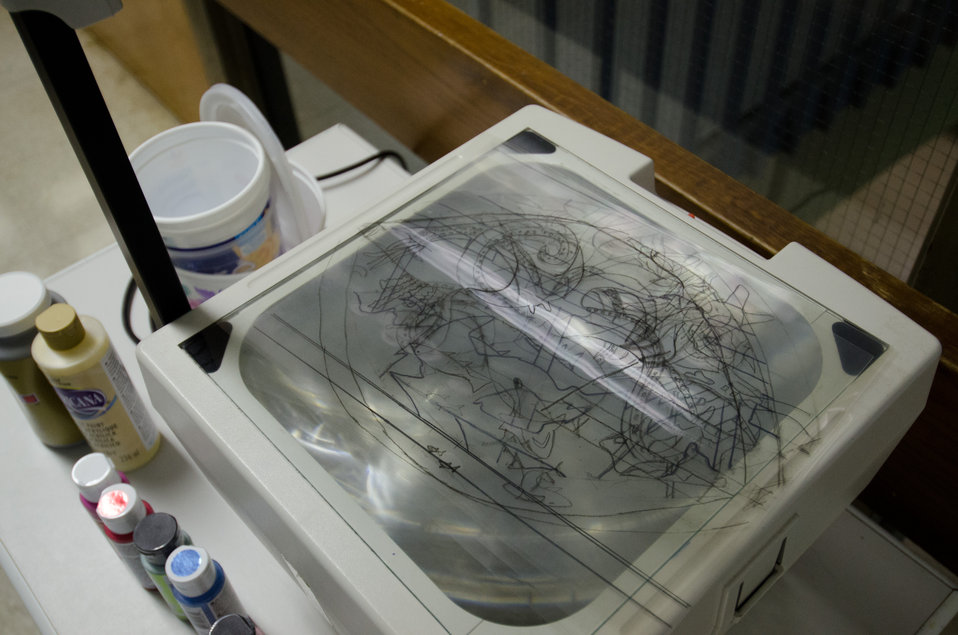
Overhead projector used to project graphic designs on walls where volunteers paint murals during District of Columbia Public Schools’ (DCPS) Beautification Day, on Saturday, August 25, 2012, at Thurgood Marshall Elementary School, in Washington, D.C. Each year people are invited to help “spruce up” public school facilities in preparation for the first day of school. More than 70 volunteers pitched in at this large school facility. The People’s Garden effort involves building and painting raised planter boxes, then preparing the soil mixture so they are “ready to grow.” Additionally, a team that includes descendants of U.S. Supreme Court Justice Thurgood Marshall assembles a prefabricated garden toolshed. The Justice’s son, John Marshall leads the team, which includes Brianna the Justice’s great-grand daughter in one of many multi-generational efforts at this school today. Washington Capitals Forward Mike Riberio, his family and mascot Slapshot participated in every project underway at Marshall School. From the outside gardens, to inside murals, and robotics worktable construction, the teams made their goals.